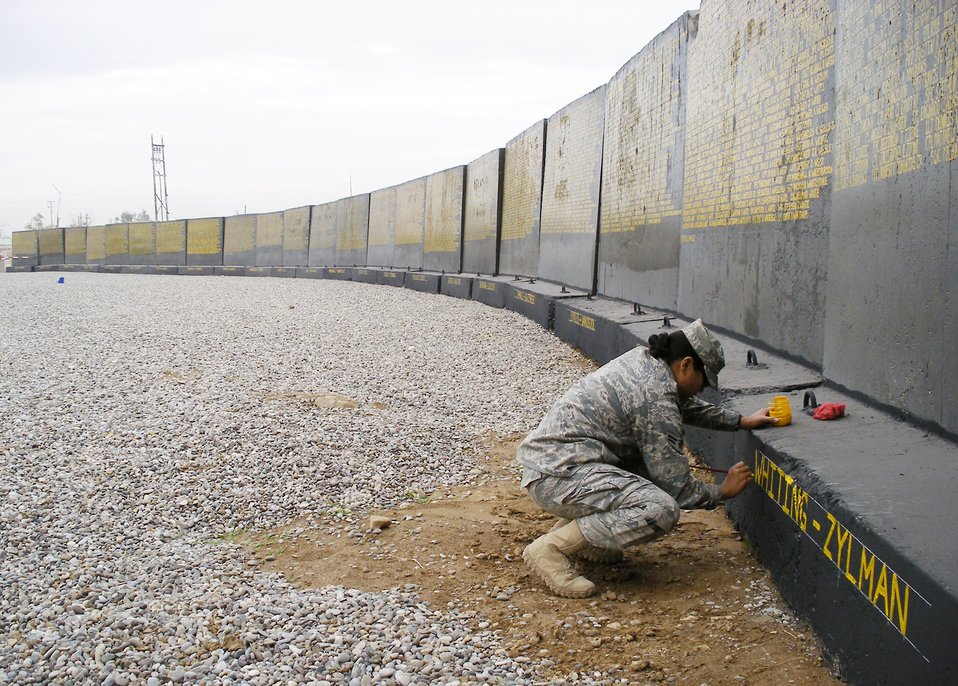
In memoriam

Airman 1st Class Tanja Kambel updates the memorial wall at the base helicopter pad Nov. 25, 2009, at Kirkuk Regional Air Base, Iraq. Airman Kambel is an 506th Expeditionary Security Forces Squadron patrol member. The memorial wall holds the names of all the servicemembers who lost their lives during Operation Iraqi Freedom since the start of the campaign in 2003.